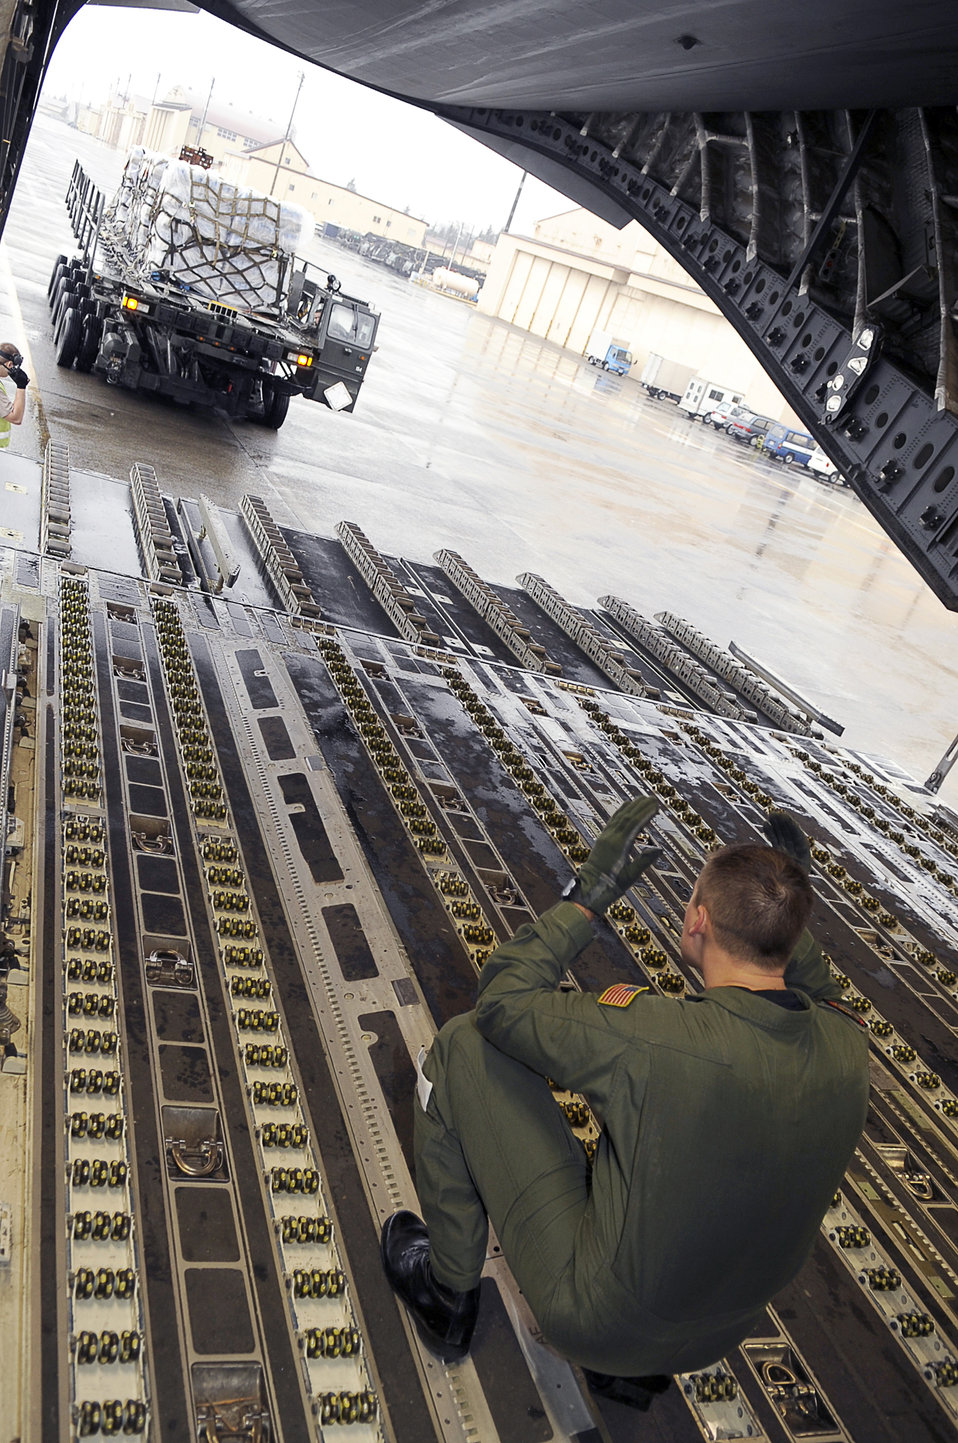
Airmen at Yokota deliver water in support of Japan relief efforts

As part of Operation Tomodachi, Staff Sgt. Chris Baker guides a K-loader with humanitarian supplies behind a C-17 Globemaster III March 21, 2011, at Yokota Air Base, Japan. Crews unloaded the water and other relief items at Sendai Airport as American forces worked closely with their Japanese counterparts to aid the people of Japan in the aftermath of an earthquake that hit Japan March 11.